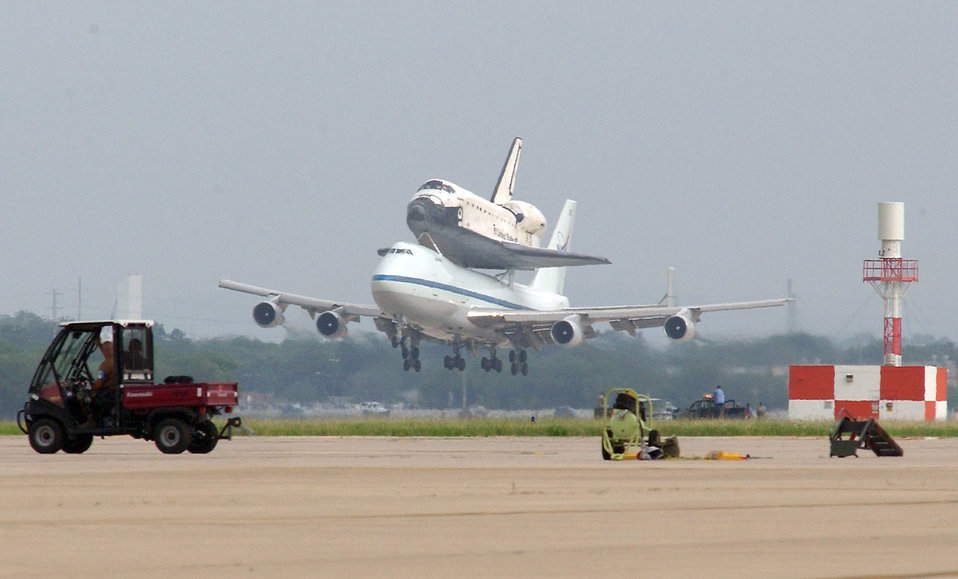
Photo essay: Shuttle transitions through Air Force bases

Space Shuttle Atlantis riding atop a NASA-modified Boeing 747 Shuttle Carrier Aircraft lands June 2 at Lackland Air Force Base, Texas. The shuttle was on its way back to NASA's Kennedy Space Center in Florida and stopped at Lackland AFB to refuel.